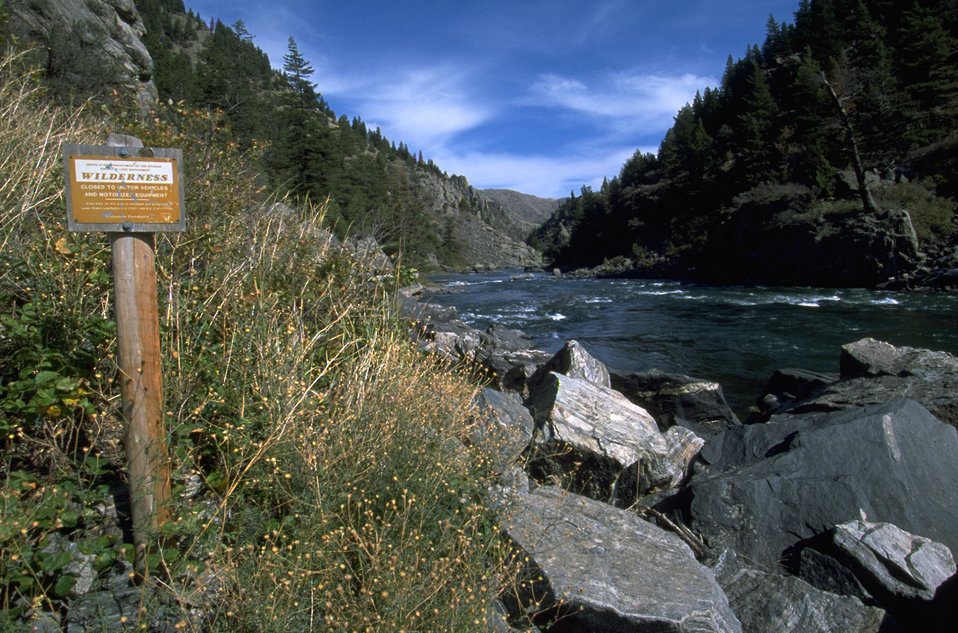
Looking downstream of the Madison River